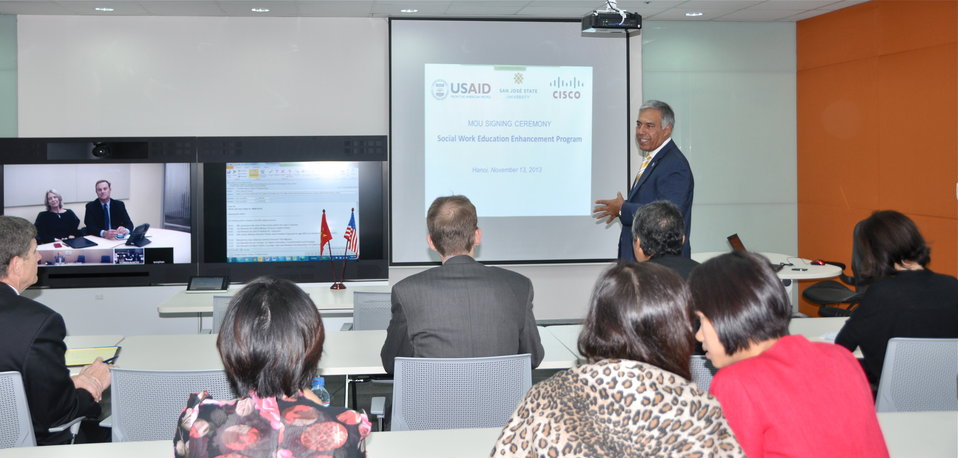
San Jose State University President Dr. Mohammed Qayoumi speaks at the MOU signing ceremony.

Hanoi, November 13, 2013.